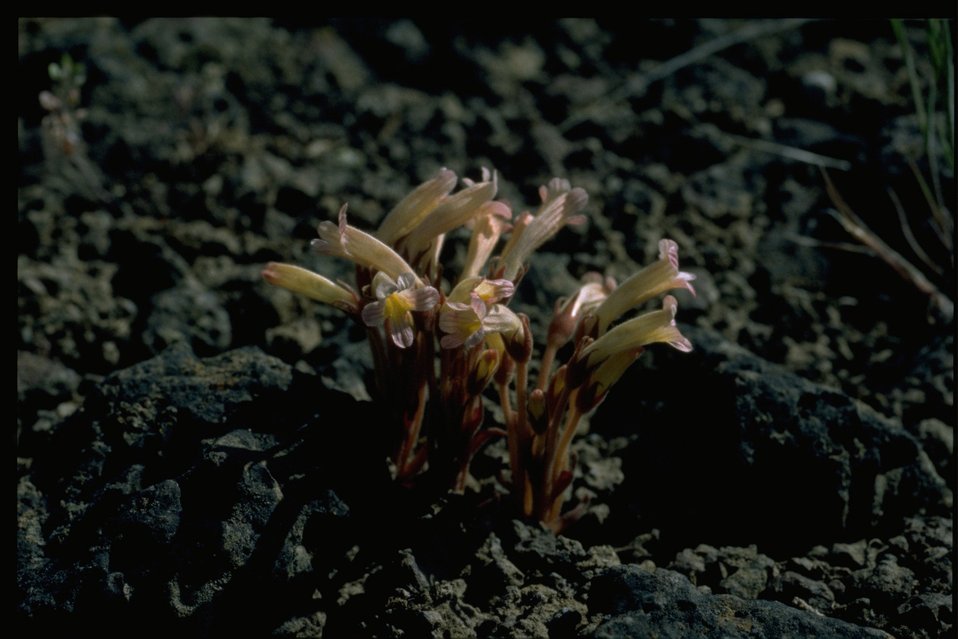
Medium shot of clustered broomrape (Orobanche fasciculata).